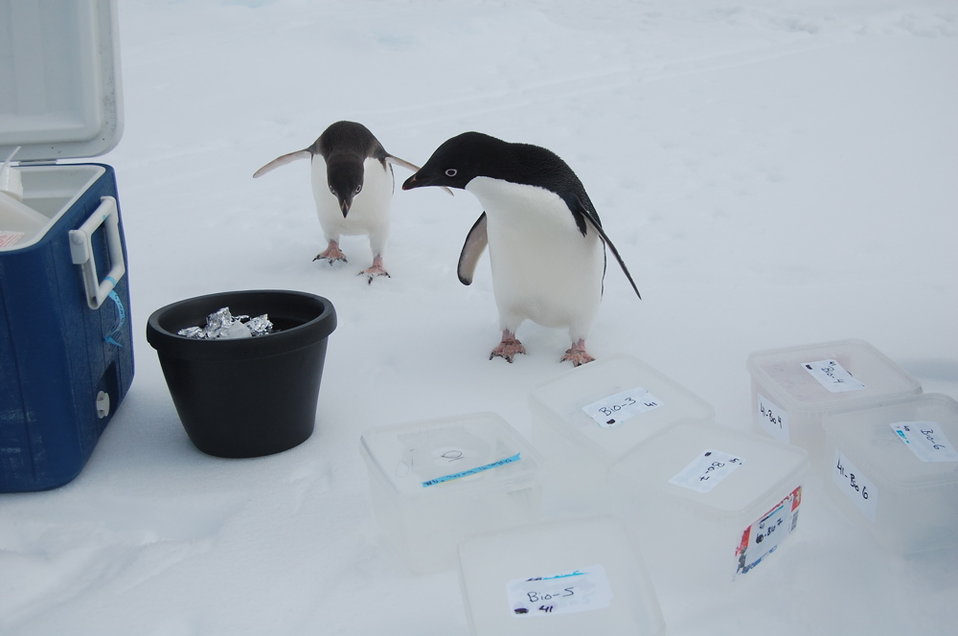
Photo of the Week: Penguins, Plankton, and Argonne's Advanced Photon Source

For years, researchers have known that certain elements of phytoplankton can possibly trap carbon dioxide from the atmosphere and remove iron from the ocean, but little is known about how iron is cycled and removed from the ocean. Argonne National Laboratory's Advanced Photon Source is helping scientists study climate by measuring the ratio of iron and silica in phytoplankton in Antarctica's Ross Sea. In this photo, a couple of Adelie penguins are checking out some of the samples of phytoplankton collected by researchers in Antarctica.